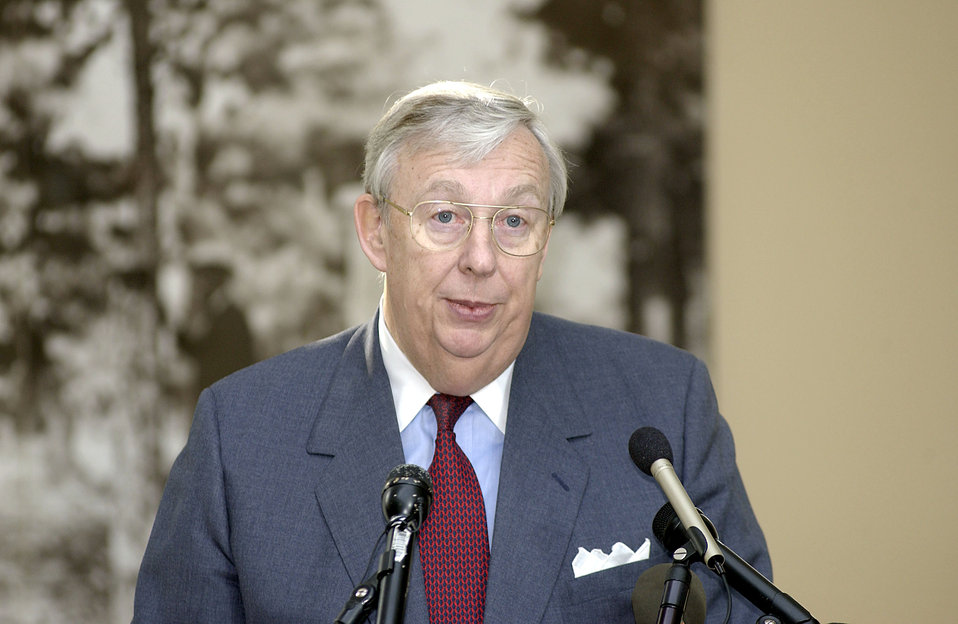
Unveiling ceremony

WASHINGTON - Air Force Secretary Dr. James G. Roche unveiled a memorial at Arlington National Cemetery on Jan.8 to honor Tech. Sgt. John A. Chapman who was killed March 4, 2002, while fighting against the Taliban during Operation Anaconda in Afghanistan. He was posthumously decorated with the nation's second-highest award for valor, the Air Force Cross.